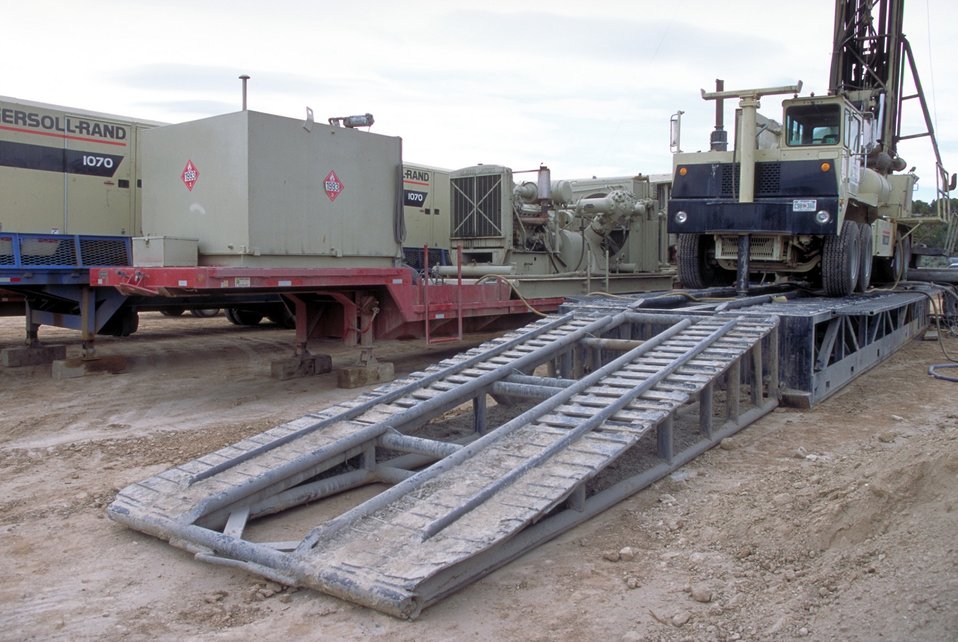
Drilling for coal bed methane near Price, Utah.